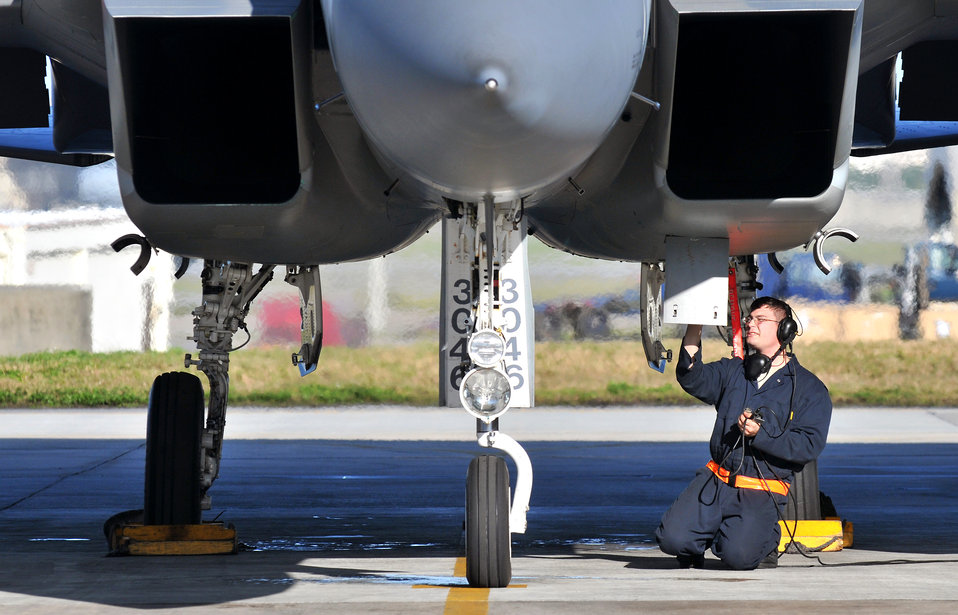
Joint Bilateral Training

An Airman from the 44th Aircraft Maintenance Unit conducts a pre-flight check on an F-15C Eagle Feb. 23, 2010 at Kadena Air Base, Japan. Kadena Airmen were participating in joint bilateral training with other U.S. forces and the Japan Air Self Defense Force from Feb. 22 to 26.